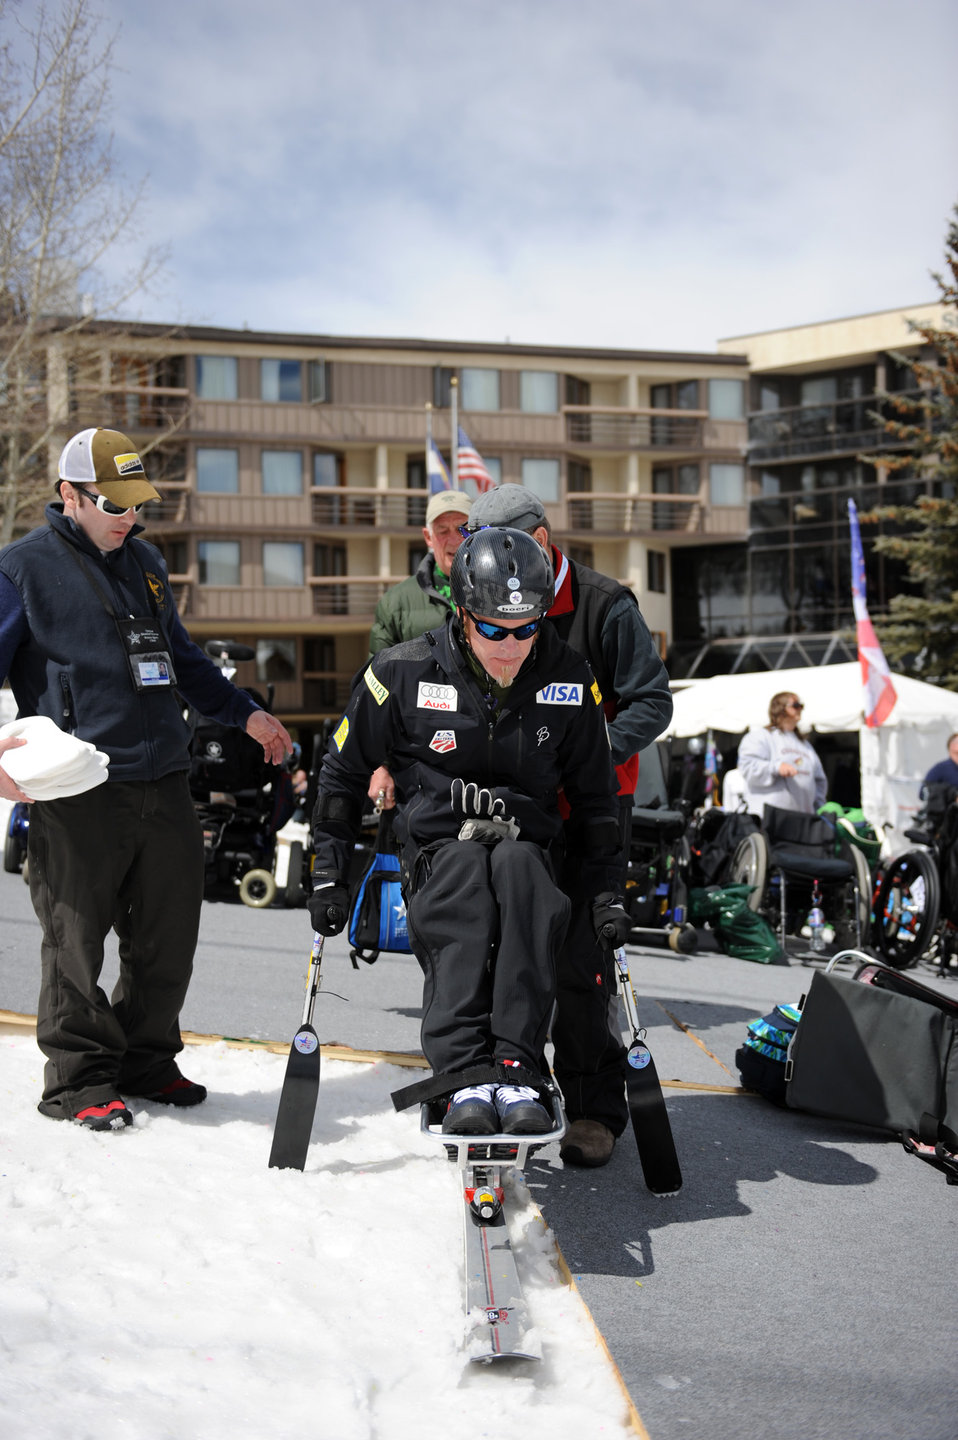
An Air Force veteran’s story: From combat controller to Paralympian

Sean Halsted gets strapped into a mono-ski outside The Silvertree Hotel for the 24th National Disabled American Veterans Winter Sports Clinic March 30, 2010, in Snowmass Village, Colo. Mr. Halsted is an Air Force veteran and resides in Rathdrum, Idaho. The event is sponsored by the Department of Veterans Affairs and Disabled American Veterans.